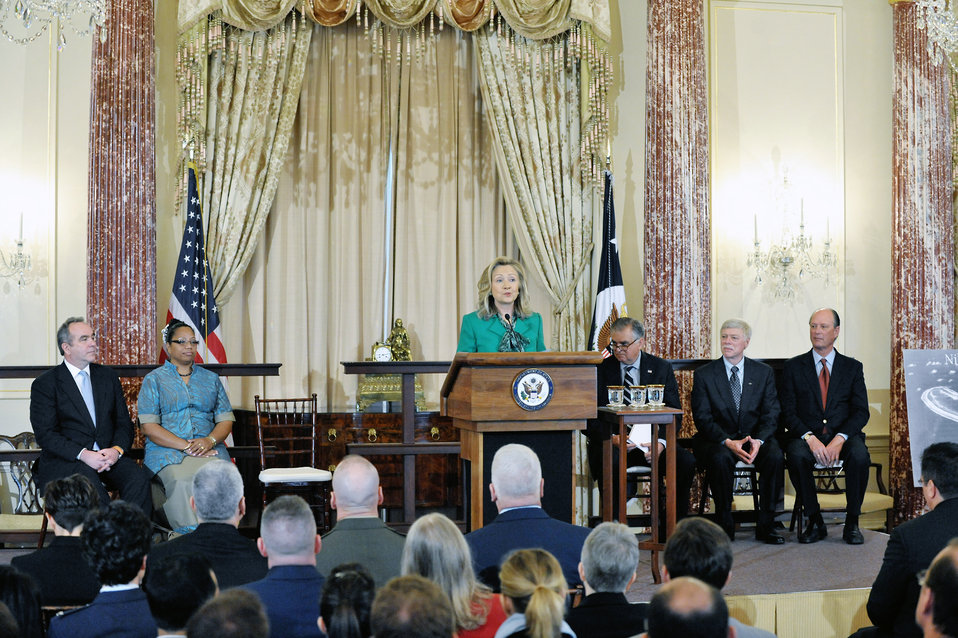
Secretary Clinton Delivers Remarks at Event Celebrating Amelia Earhart and U.S. Ties to Our Pacific Neighbors

U.S. Secretary of State Hillary Rodham Clinton deliver remarks at an event celebrating Amelia Earhart and the United States’ ties to our Pacific neighbors at the Department of State on March 20, 2012.